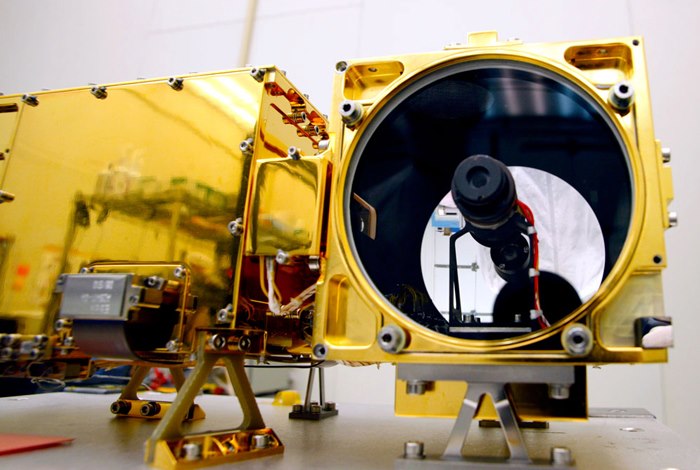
Photo of the Week: Laser Beats Rock

On August 5, 2012, the Curiosity rover touched down on the surface of Mars. The ChemCam instrument package, developed at Los Alamos National Laboratory, is a device mounted on the Mars Curiosity rover that uses two remote sensing instruments: the Laser-Induced Breakdown Spectrometer (LIBS) and a Remote Micro-Imager (RMI).

The LIBS fires a powerful laser that determines chemical compositions of rock and soil samples, while the RMI takes photos of the samples within the rover's vicinity. In this photo, the ChemCam is being prepared in the clean room prior to the launch of NASA's Mars Science Laboratory mission.